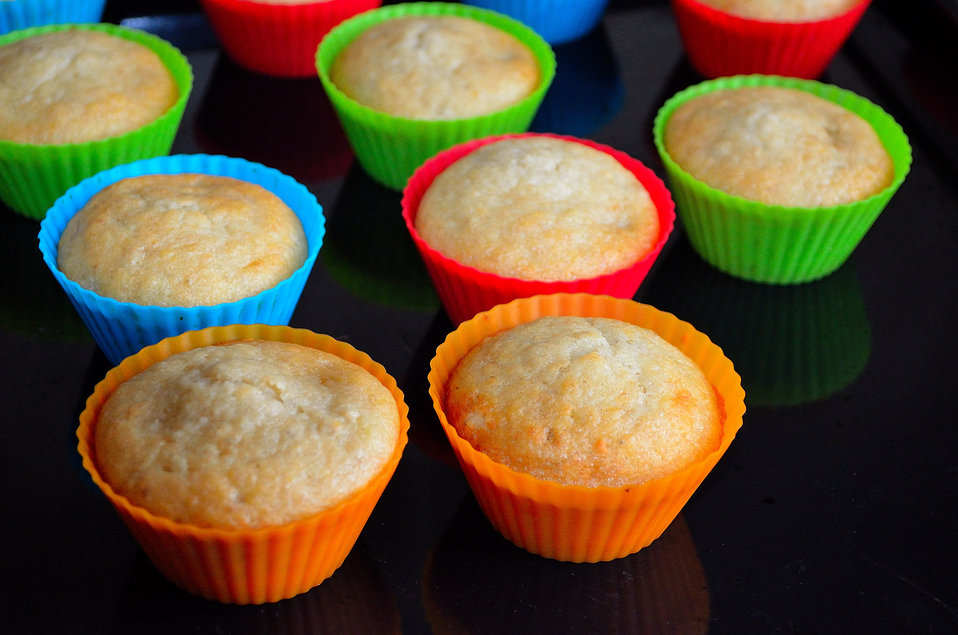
Baked muffins.